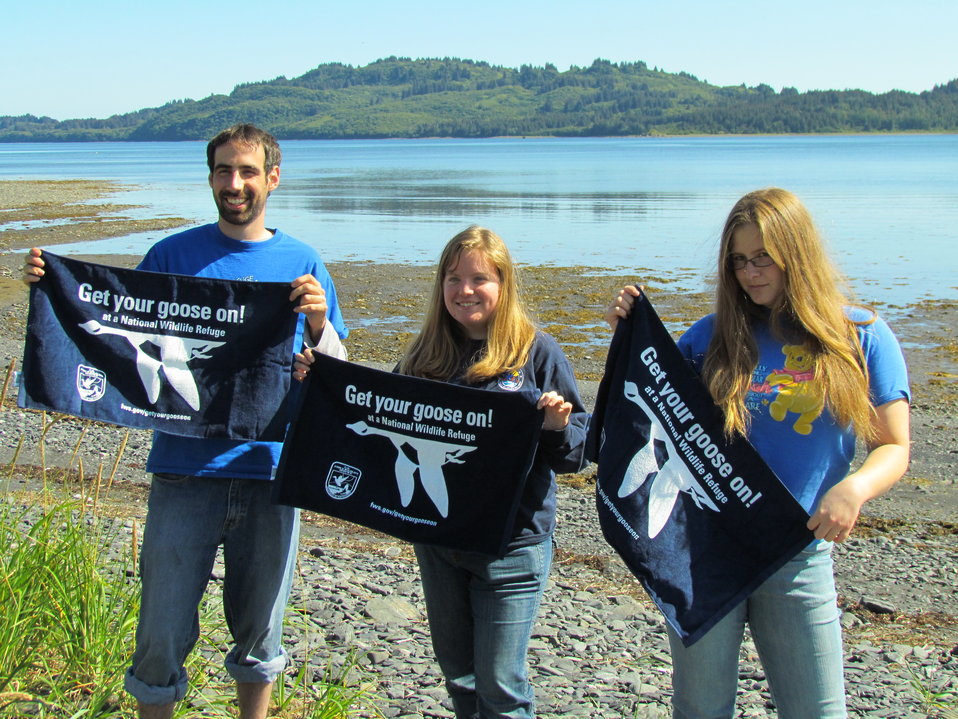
Get Your Goose On! - Alaska Style

Student Conservation Association interns, Rory Psotka, Ali Sutton and Kristen Riesberg

Credit: Shelly Lawson / USFWS

The Kodiak National Wildlife Refuge is a United States National Wildlife Refuge in the Kodiak Archipelago in southwestern Alaska, United States.

The Kodiak National Wildlife Refuge includes the southwestern two-thirds of Kodiak Island, Uganik Island, the Red Peaks area of Afognak Island and all of Ban Island in the archipelago. It encompasses 1,990,418 acres (8,054.94 km2).[2] The refuge is administered from offices in Kodiak.

The refuge contains seven major rivers and about 100 streams. It is a spawning ground for all six species of Pacific Ocean salmon, trout and several other fish species, as well as a nesting ground for 250 species of bird, many of which feed on salmon. The refuge has only six native species of mammals: Kodiak brown bear, red fox, river otter, ermine, little brown bat and tundra vole. The non-native mammals Sitka deer, mountain goat, Roosevelt elk, snowshoe hare and beaver were introduced to the archipelago between the 1920s and 1950s and are now hunted and trapped.

The climate of the refuge is that of southern Alaska, mild and rainy. Many areas in the refuge are densely forested with Sitka Spruce at lower elevations. There are grasslands in drier areas and at higher elevations. The refuge contains several small glaciers.